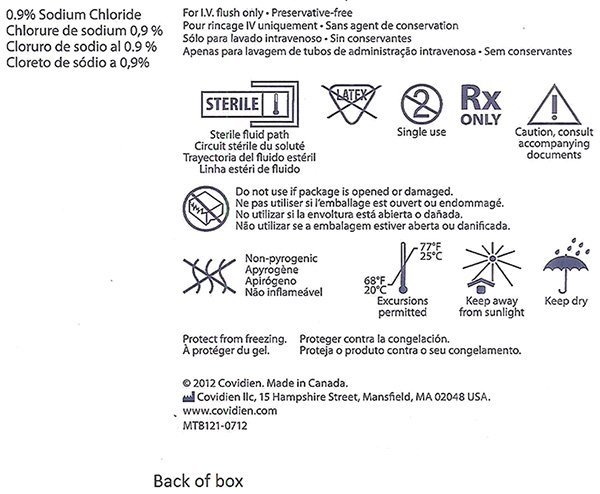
RECALLED – Monoject Prefill Flush Syringes

August 19, 2013 – Product Recall – Covidien Initiates a Voluntary Recall of Certain Lots of Monoject™ Prefill Flush Syringes Sold in the United States and Bermuda.